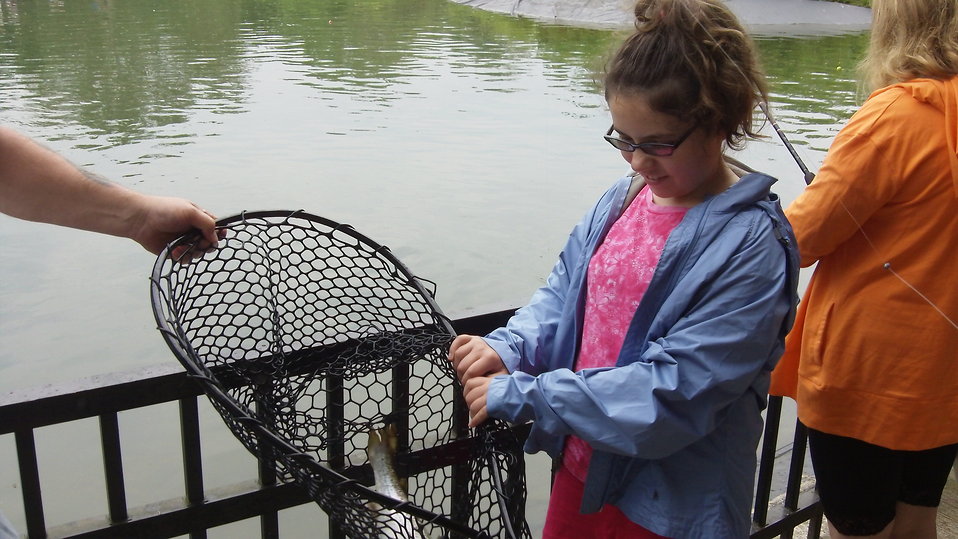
Northeast Fishery Center's Annual Fishing Event

Girl holds a fish in her net at the Northeast Fishery Center's annual fishing event in Lamar, PA.